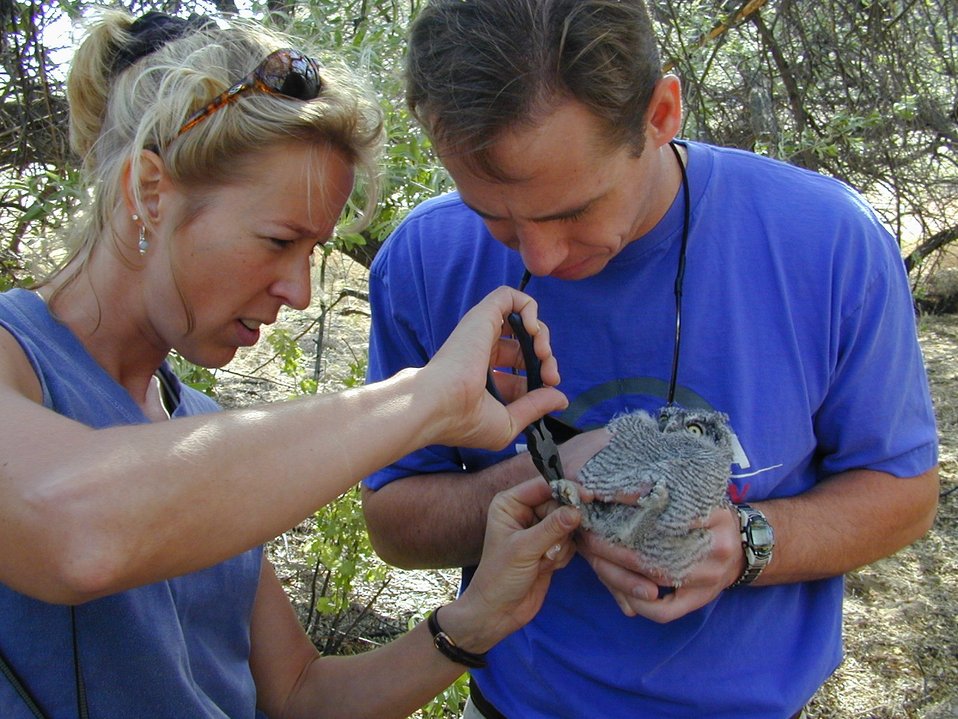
Environmental Education Fire Workshop Timberline High School Fall 2000